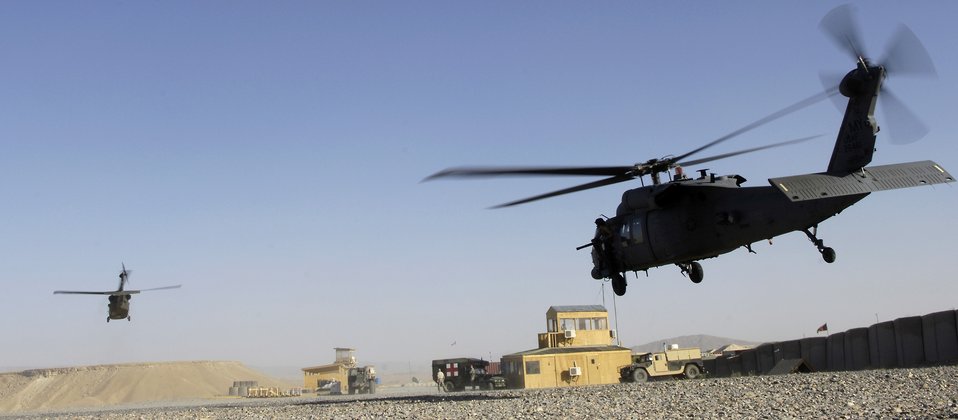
Air Force aids Army with medevac missions

An HH-60 Pave Hawk helicopter and an Army UH-60 Blackhawk take off during a medevac mission June 13. The 33rd Expeditionary Rescue Squadron is the first squadron to have a combat-search-and-rescue mission and a medevac mission, and is based at Kandahar, Afghanistan.